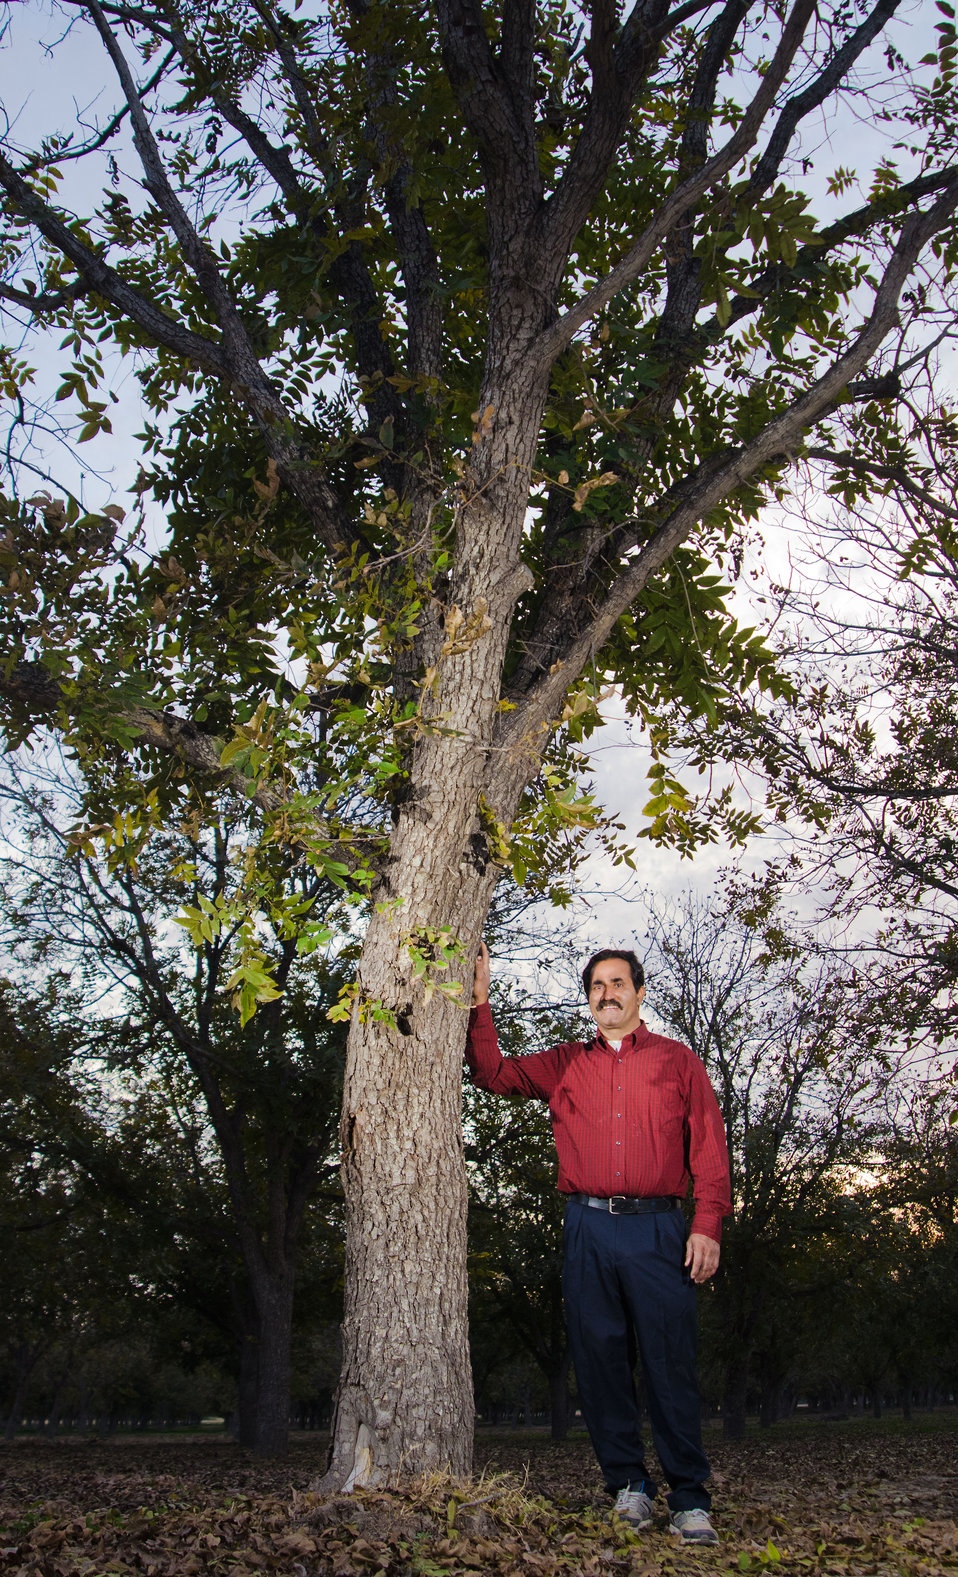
Arrowhead Farms of Crystal City, TX, on Friday, December 9, 2011, has been owned by Mr. Akram Mohammad, a pecan farmer since 2005. The 719 acre farm with 10,000 trees, features some orchards with underground micro irrigation system that feeds water to the roots of 4,380 pecan trees on 146 acres. Mr. Mohammad said, “USDA (U.S. Department of Agriculture) was essential to my business and trees surviving the recent exceptional drought. The trees were stress free thanks to underground micro-irrigation. This is essential to the future growth of Texas agriculture and good for America.” U.S. Department of Agriculture’s (USDA) Environmental Quality Initiative Program (EQIP) awarded Mr. Mohammad a $130,000 grant in 2008. He provided $26,000 for the balance of the $156,000 total cost to install a 146-acre underground micro-irrigation for 4,380 trees.